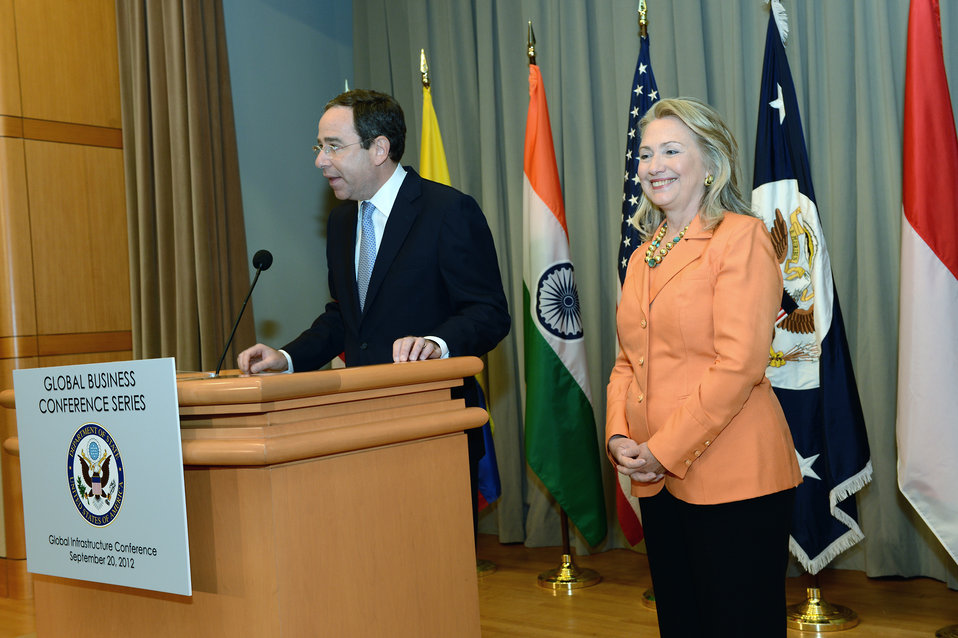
Deputy Secretary Nides Introduces Secretary Clinton

Deputy Secretary of State Thomas Nides introduces U.S. Secretary of State Hillary Rodham Clinton at the Global Infrastructure Conference at the U.S. Department of State in Washington, D.C., September 20, 2012.